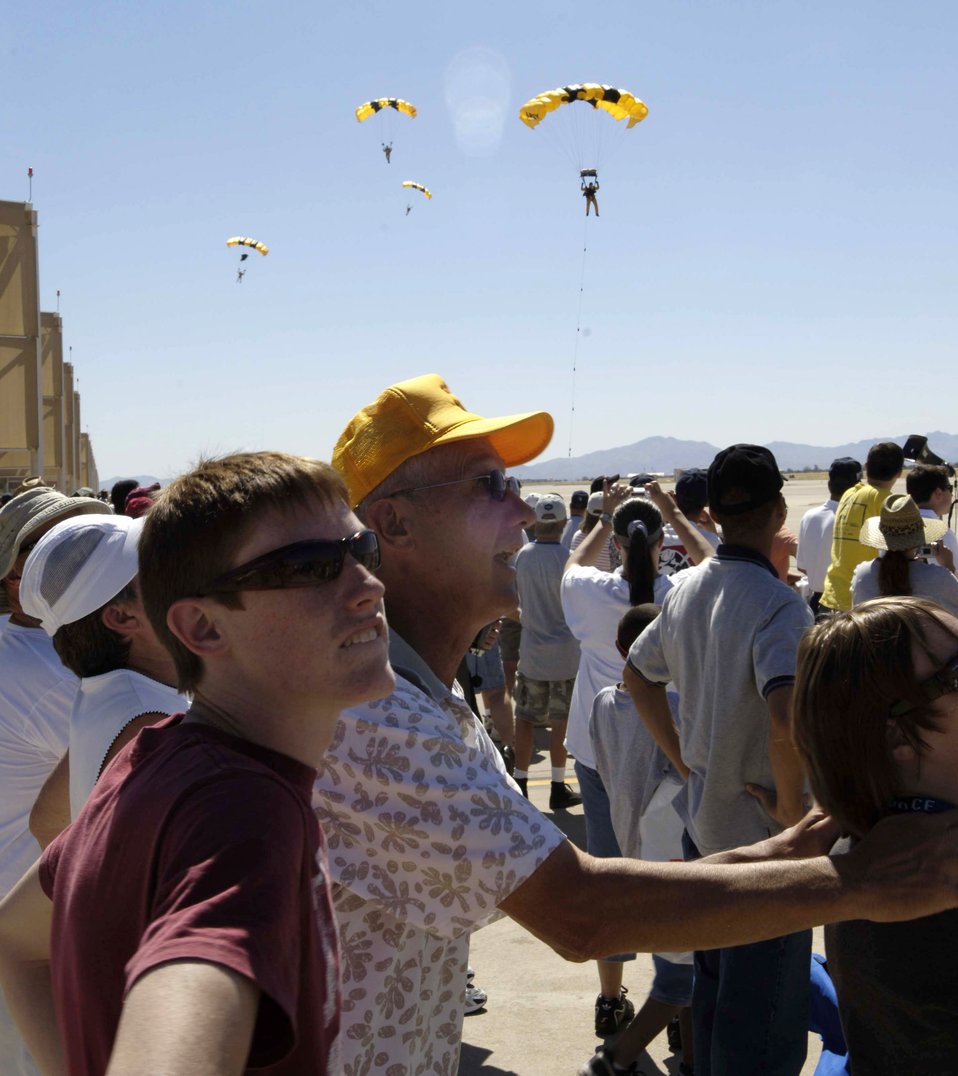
Air show features '80 Years of Airpower for America'

Spectators look on as the Golden Knights U.S. Army parachute team glides over the crowd March 18 during the 2007 Aerospace and Arizona Days air show at Davis-Monthan Air Force Base, Ariz. The two-day air show offered public an up-close look at military and civilian aerial demonstrations and static-display aircraft from across the U.S. The theme for this year's show was